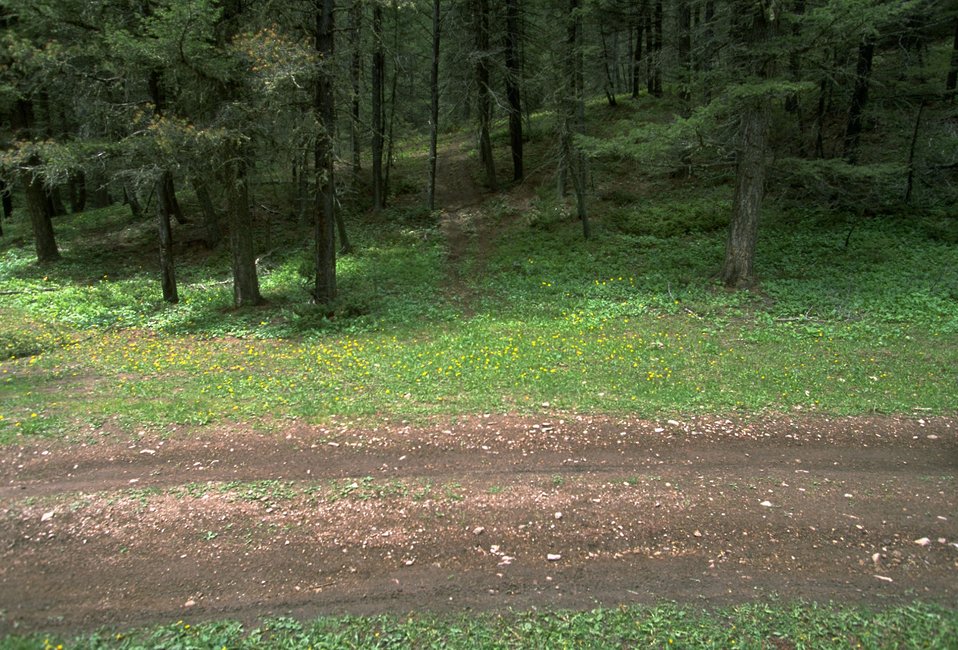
Off-Road Vehicle trail in LimeKiln Canyon